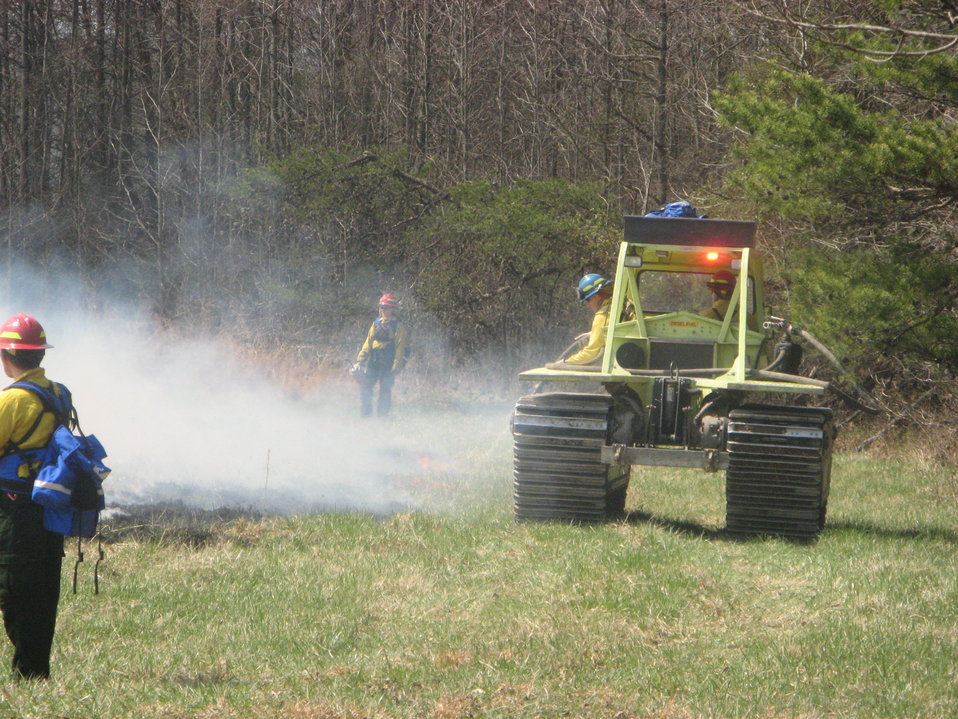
Marshmaster wets the line

Laurel, MD: Firefighters in a tracked vehicle called a Marshmaster spray water at the perimeter of a controlled burn at Patuxent National Research Refuge.